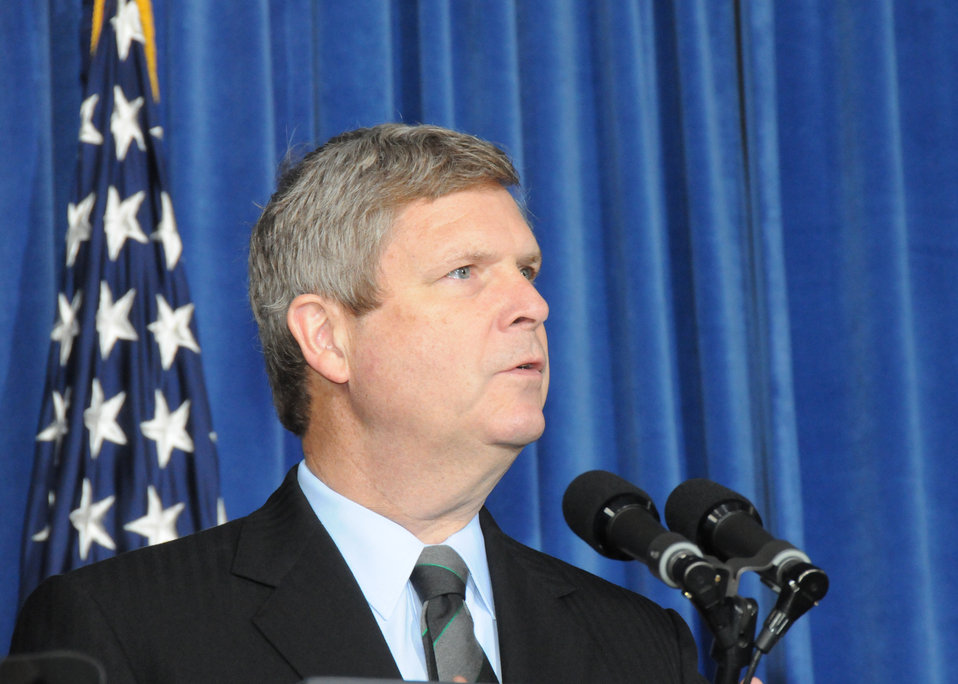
Agriculture Secretary Tom Vilsack speaks about reconnecting Americans to the outdoors at the opening of the White House Conference on America’s Great Outdoors held at the Department of Interior on Friday, April 16, 2010. USDA photo 10di1316-82